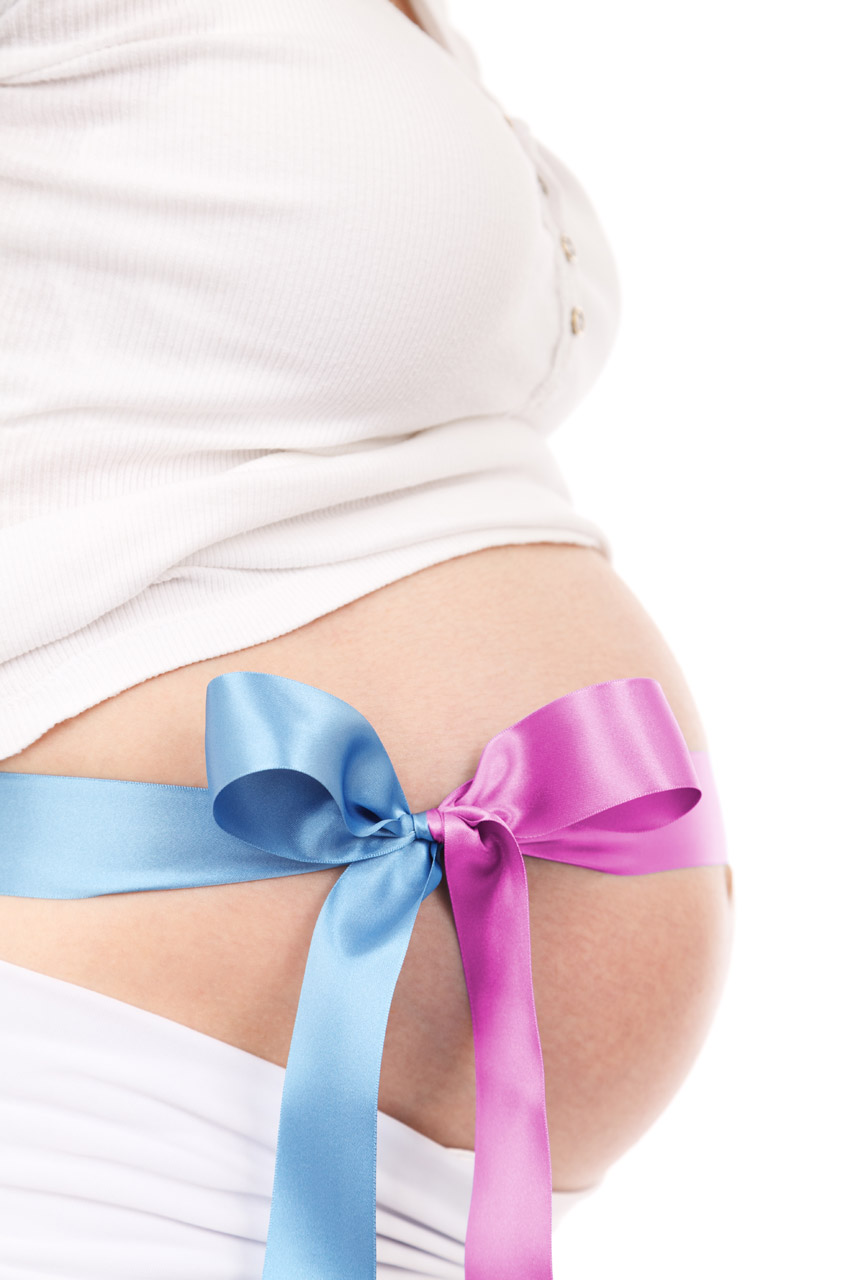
Boy or girl?

Expecting a baby or baby girl.